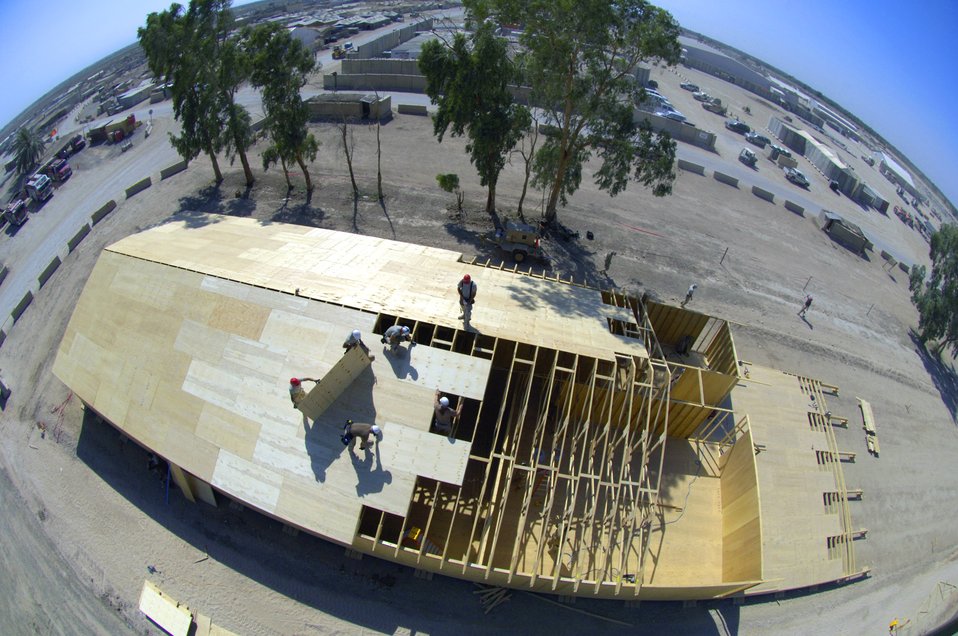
RED HORSE Airmen support Army in southern Baghdad

Airmen with the 557th Expeditionary RED HORSE Squadron work on the roof of a tactical operations center June 22 at Forward Operating Base Kalsu, Iraq. The Rapid Engineer Deployable Heavy Operational Repair Squadron Engineers , or RED HORSE, Airmen are forward deployed from Balad Air Base, Iraq, to build four tactical operations centers for the Army's 2nd Brigade combat team, 3rd Infantry Division headquartered here. The 2/3 ID is currently running operations out of tents. The RED HORSE unit, made up of Air Guard, Reserve and active-duty Airmen, was requested by the Army to come into this